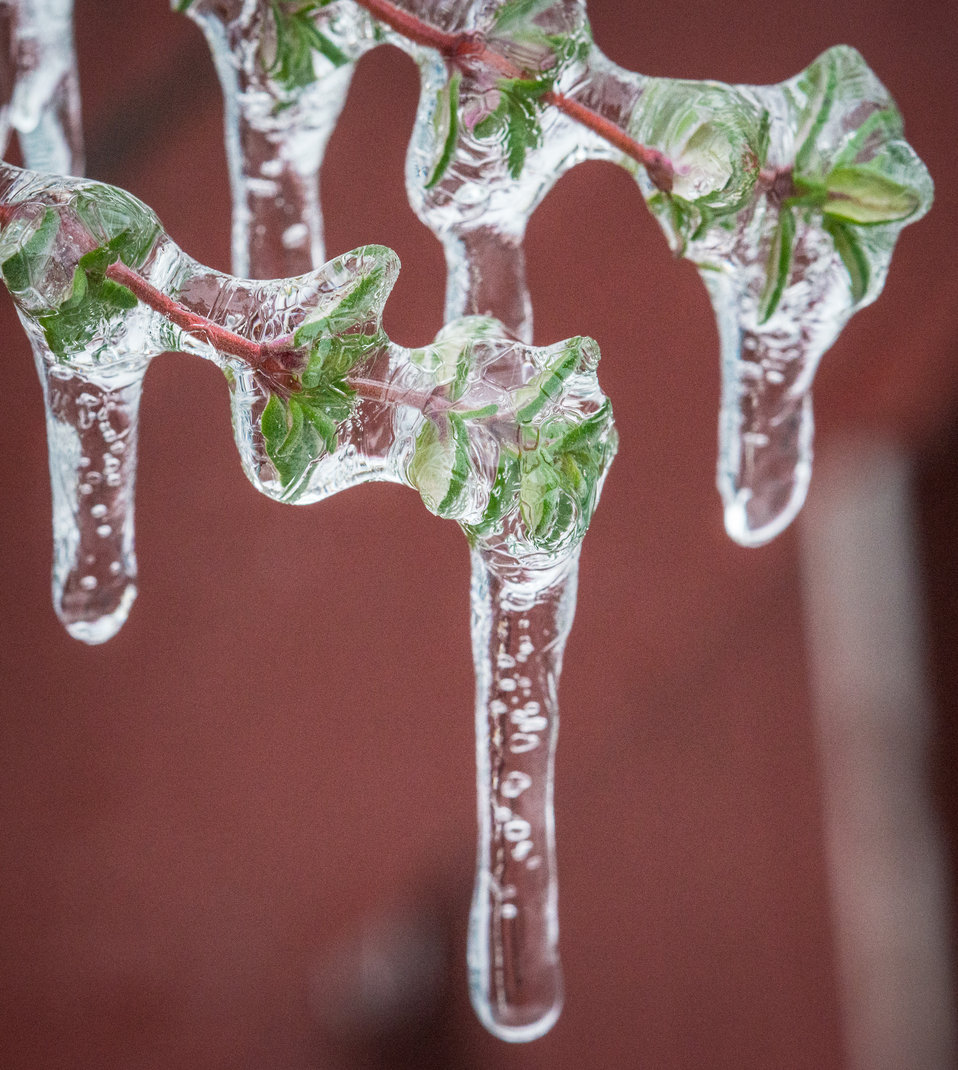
Freezing rain covers plants and trees in Falls Church, VA on Monday, Dec. 9, 2013.